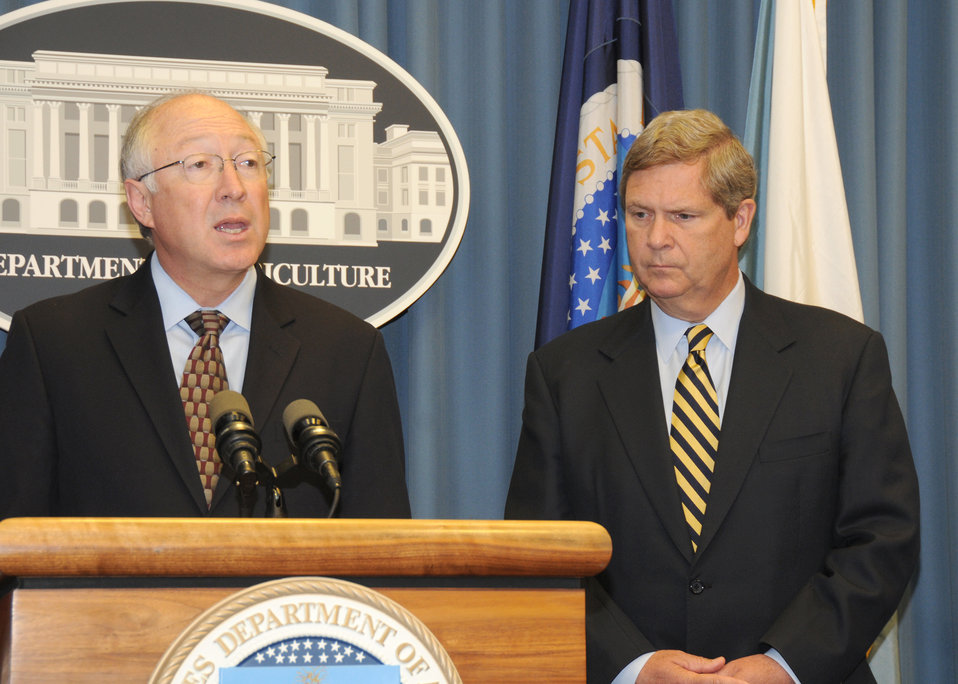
Interior Secretary Ken Salazar describes the growing challenges of wildfires and the readiness of the Department of Interior in collaboration with the Department of Agriculture to respond to those challenges during the 2010 fire season at a press briefing held at the Department of Agriculture in Washington, DC, on Thursday, June 14, 2010. (Agriculture Secretary Tom Vilsack (right) listens closely). USDA photo 10di1408-27.